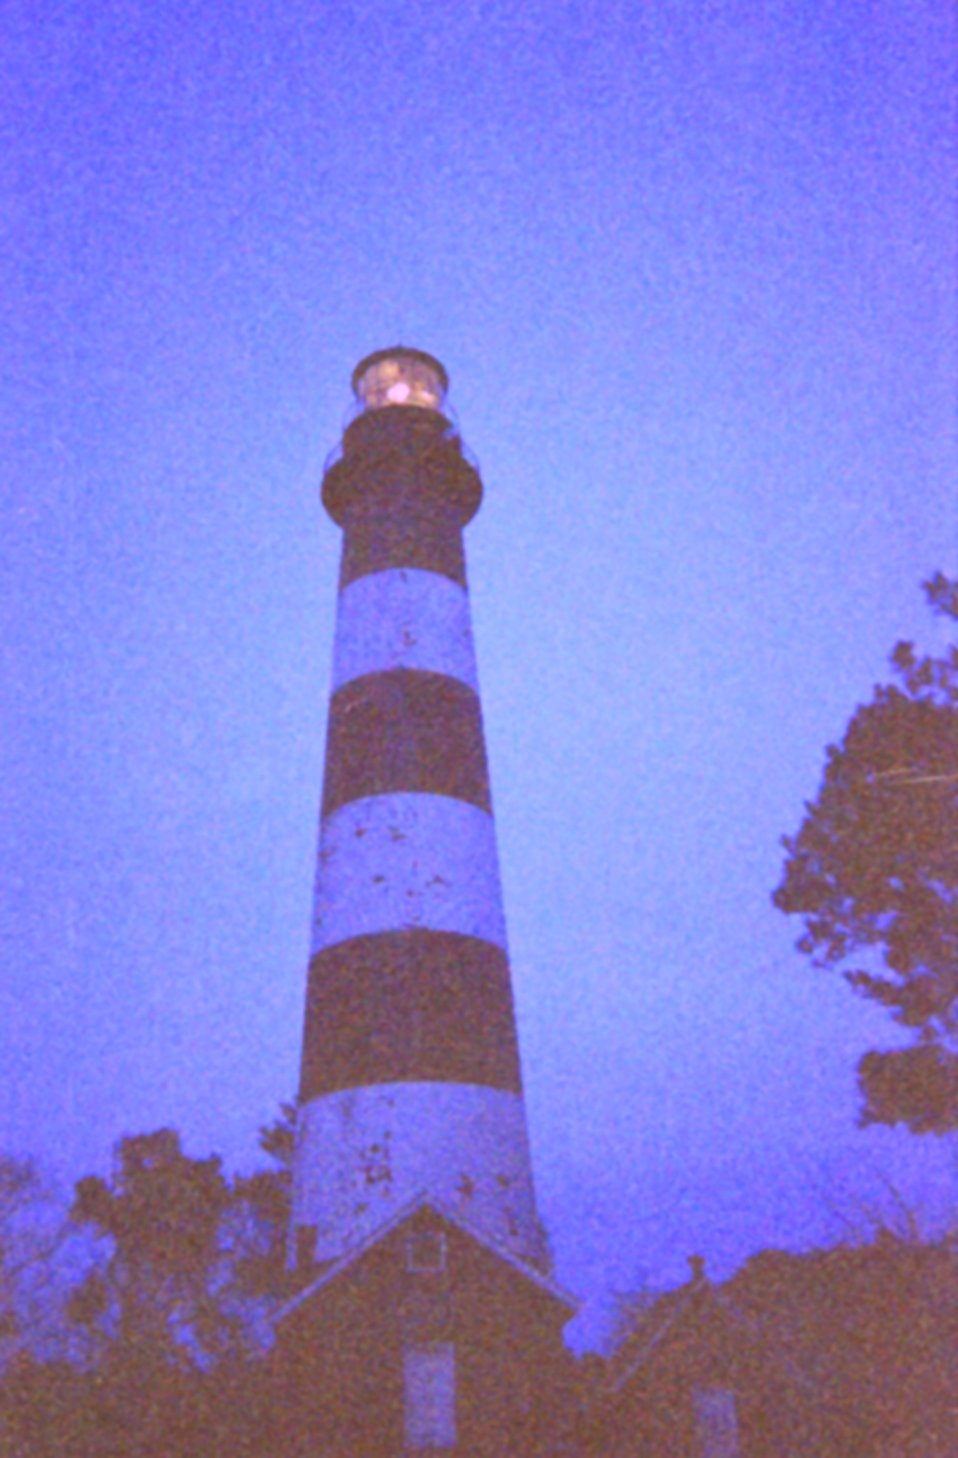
Assateague Light House at dusk, right after the light was turned on.